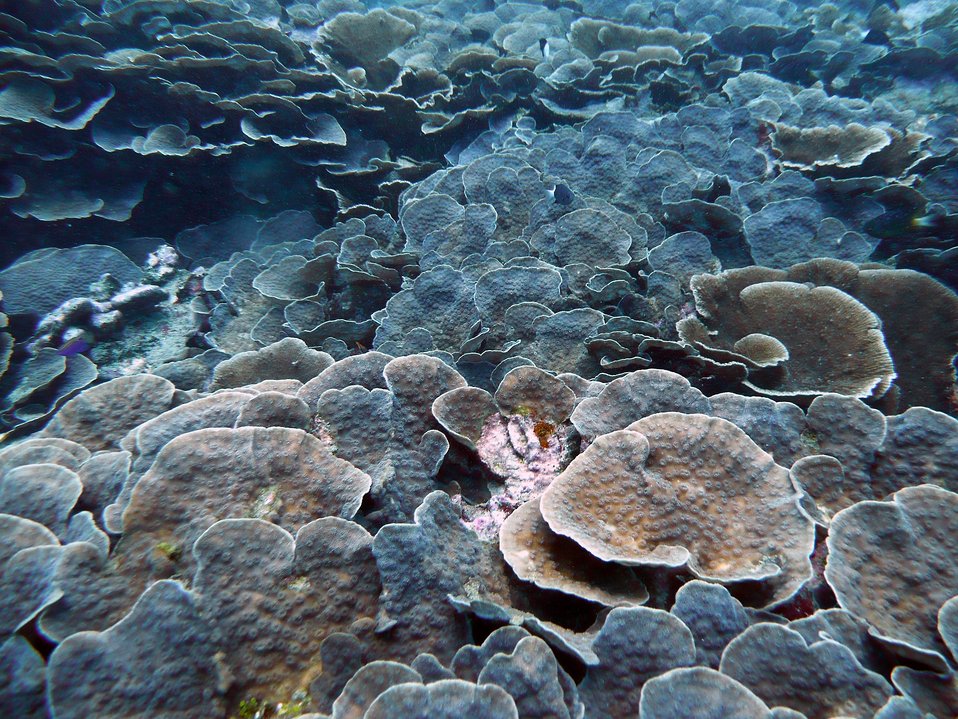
Cabbage coral